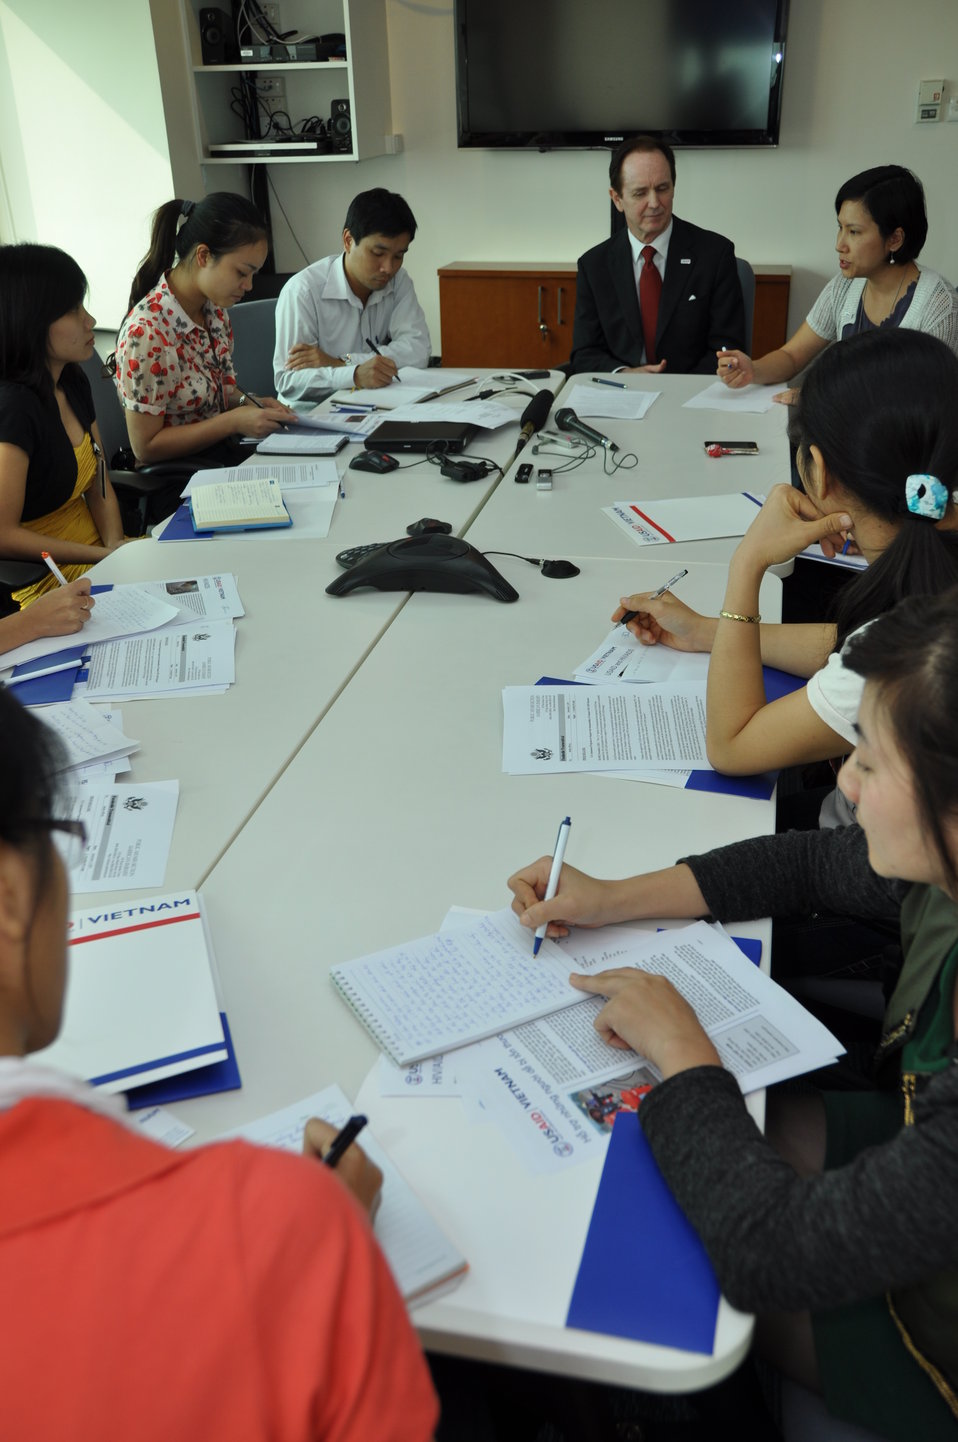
USAID Vietnam Open House, November 3, 2011